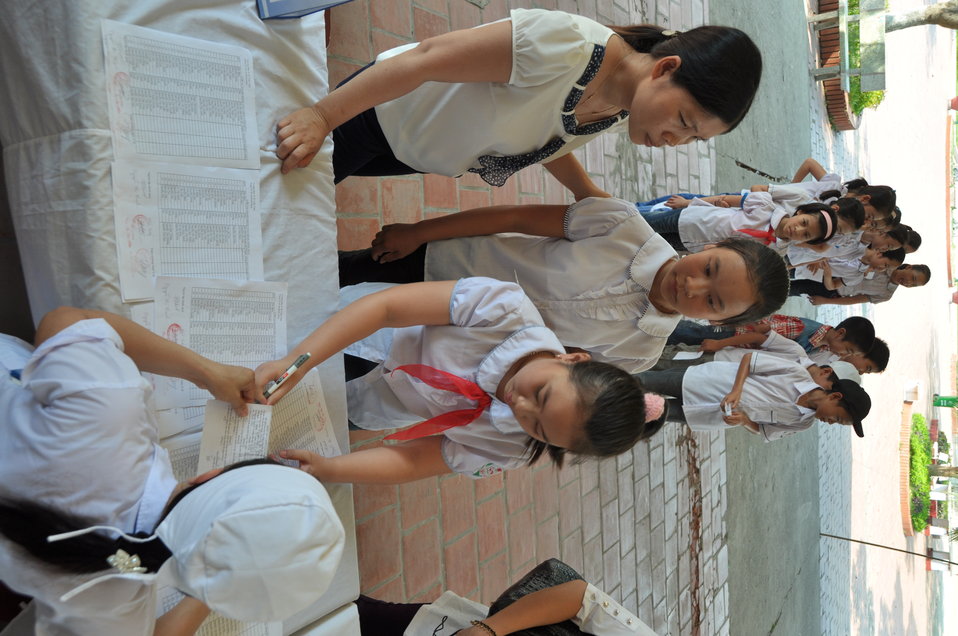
USAID supports deworming education and medication distribution in Bac Giang Province

May 20, 2013